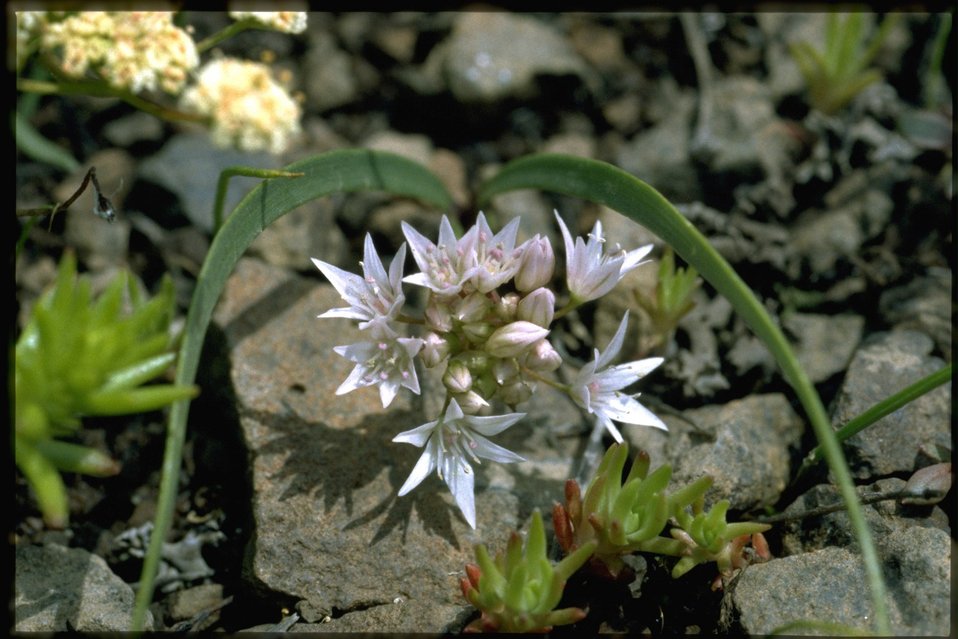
Closeup shot of Tolmie's Onion, Allium Tolmiei, wildflowers.